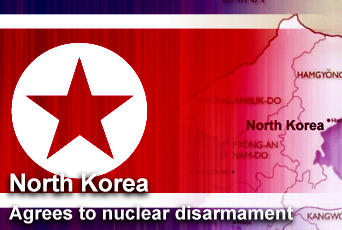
North Korea agrees to nuclear disarmament

North Korean officials have agreed to shut down nuclear operations and allow international inspectors into the country, President Bush announced Feb. 14 from Washington, D.C.